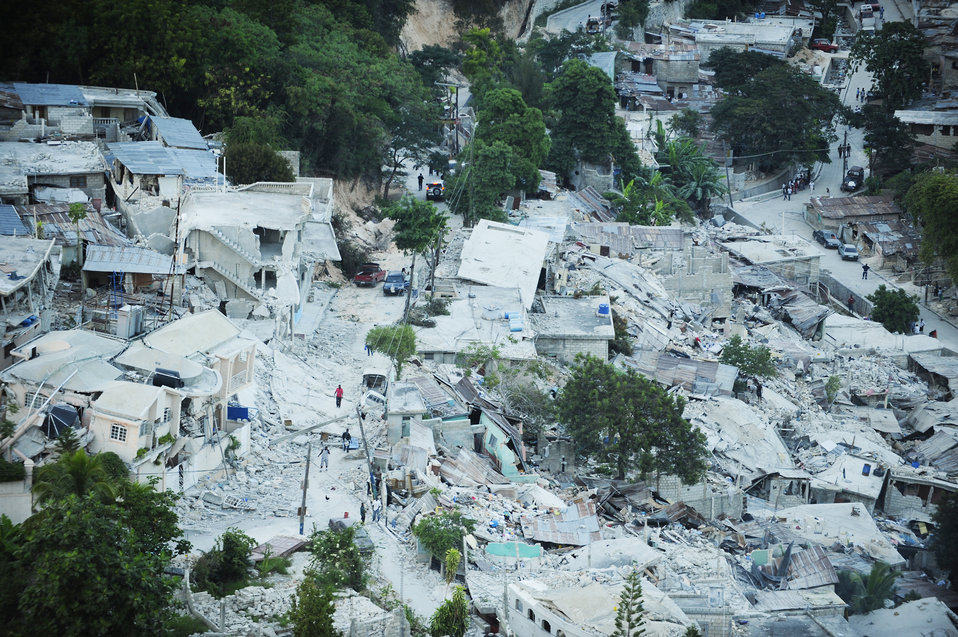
Haiti Earthquake Relief

Image of Port-au-Prince, Haiti taken on Jan. 15, 2010 following a magnitude 7 earthquake that hit the city on Jan. 12, 2010. Department of Defense assets have been dispatched to Haiti to assist with humanitarian assistance and disaster relief.